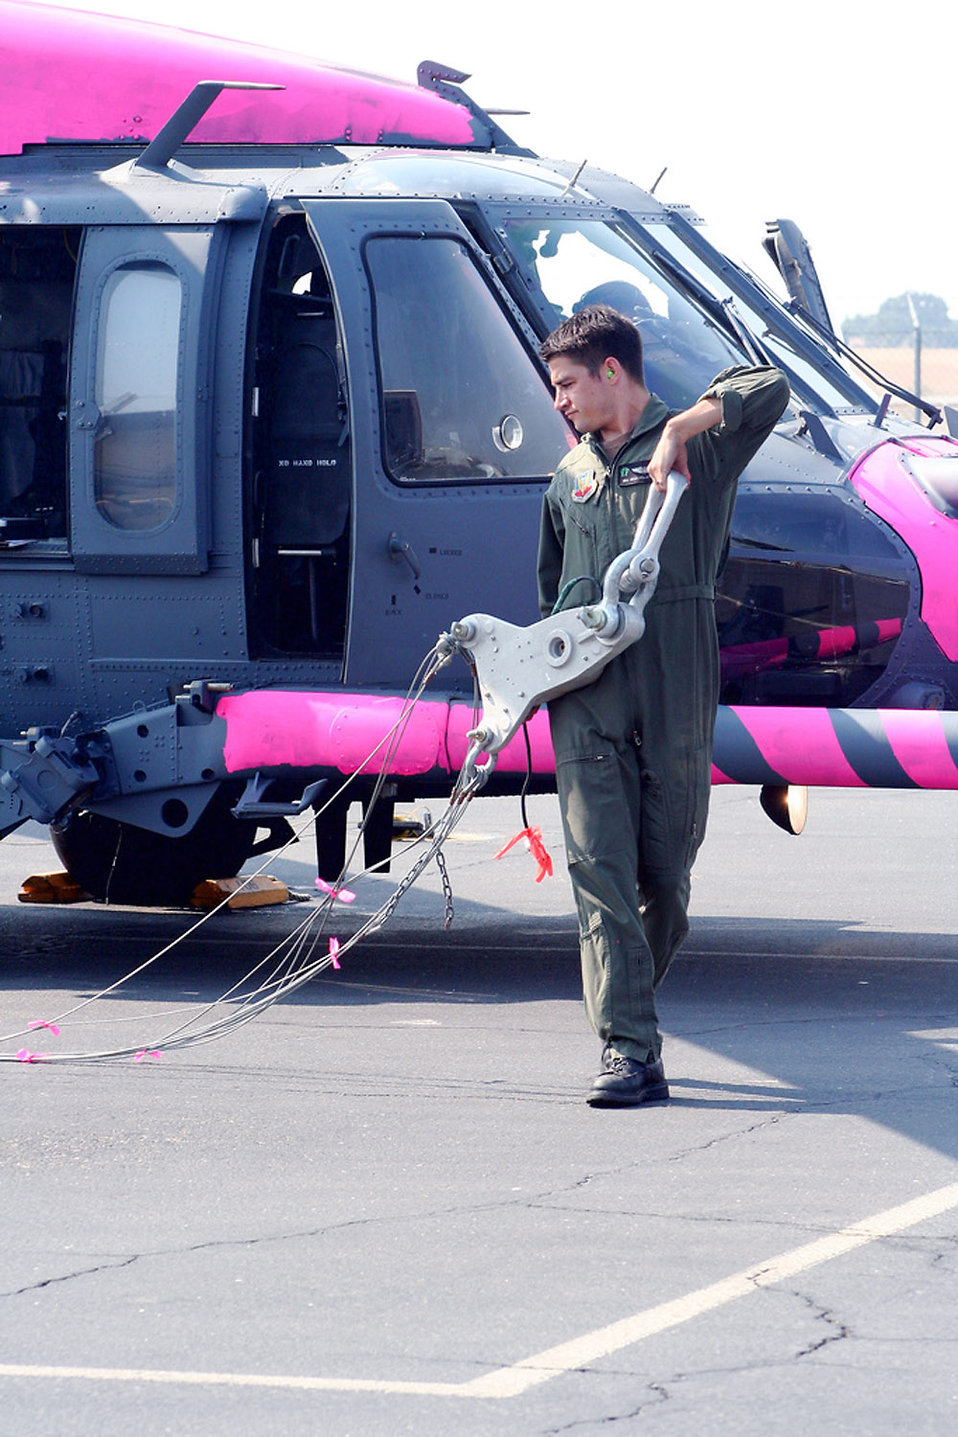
Fighting wildfires, saving lives

Senior Airman Sean Pellaton pulls a water bucket hoist July 2 near Sacramento, Calif. Aircrews trained with water buckets to become certified for firefighting suppression duty. Airman Pellaton is an HH-60G flight engineer from the 129th Rescue Wing of the California Air National Guard.